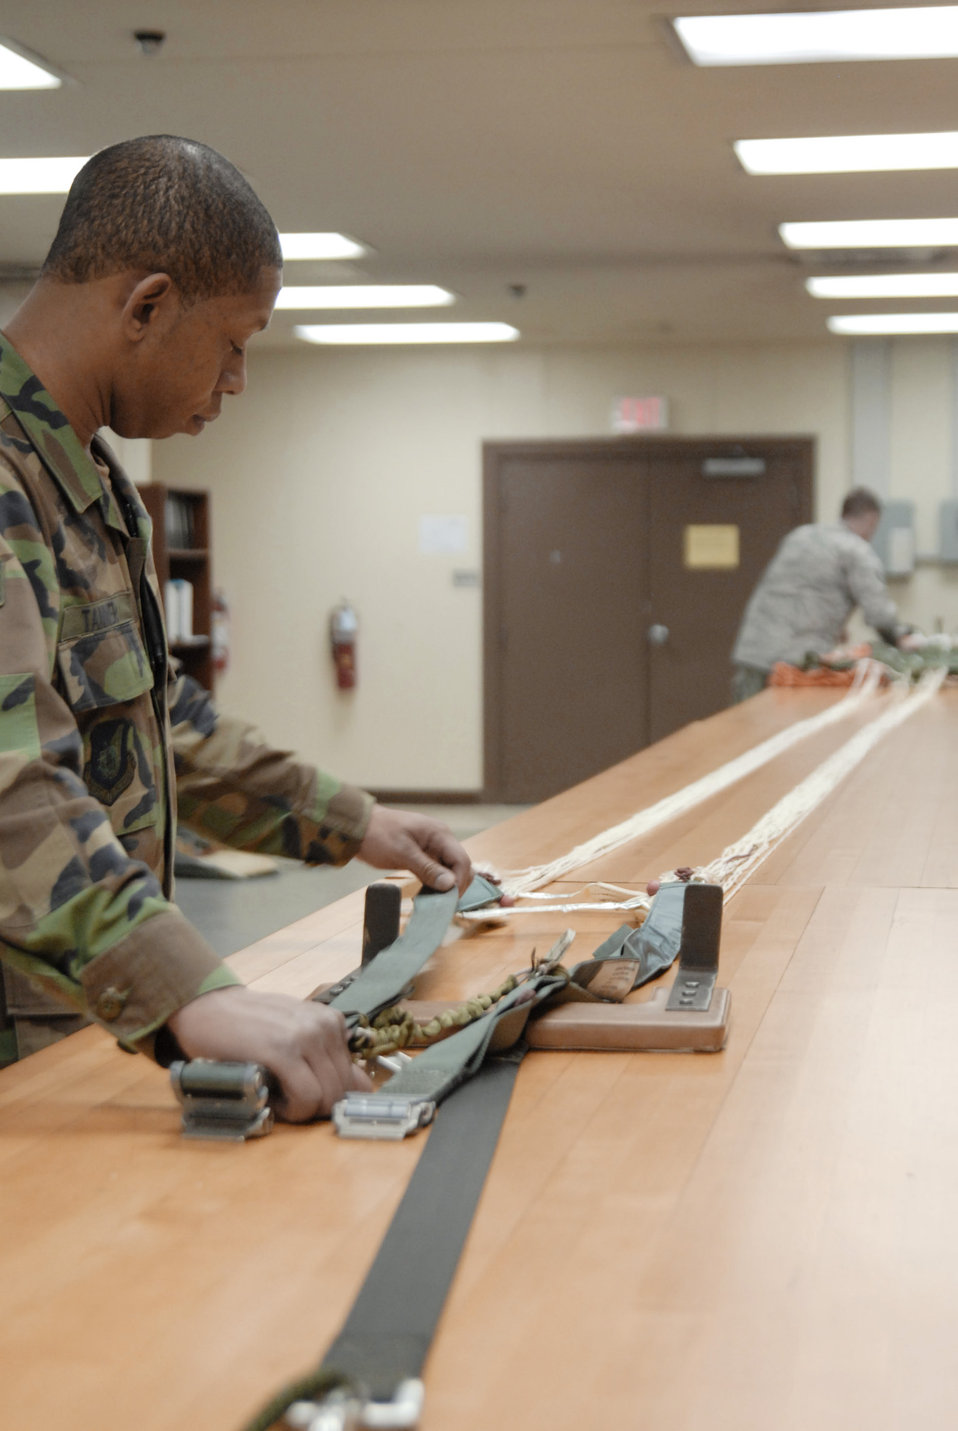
Kunsan Airmen protect lives

Staff Sgt. Cortney Tanner and Tech. Sgt. Jonathan Anlauf inspect the lines of a canopy April 7, 2010, at Kunsan Air Base, South Korea. Airman Tanner is an aircrew flight equipment craftsman, and Sergeant Anlauf is the NCO in charge of the AFE. Both are assigned to the 8th Operations Support Squadron.